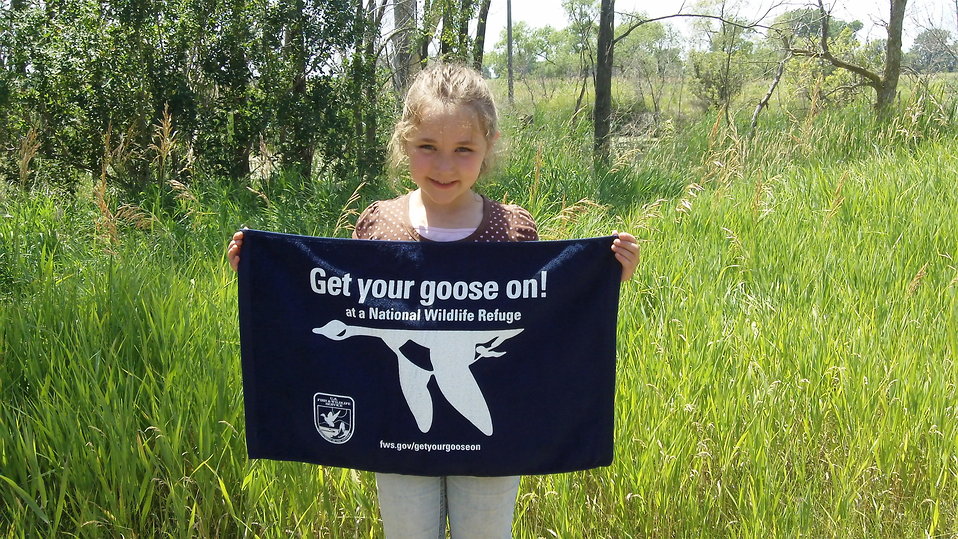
Get Your Goose On!

Photo taken at Huron Wetland Management District in east-central South Dakota.